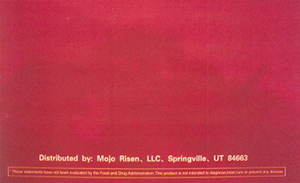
20140501163224544pic5 Page 2